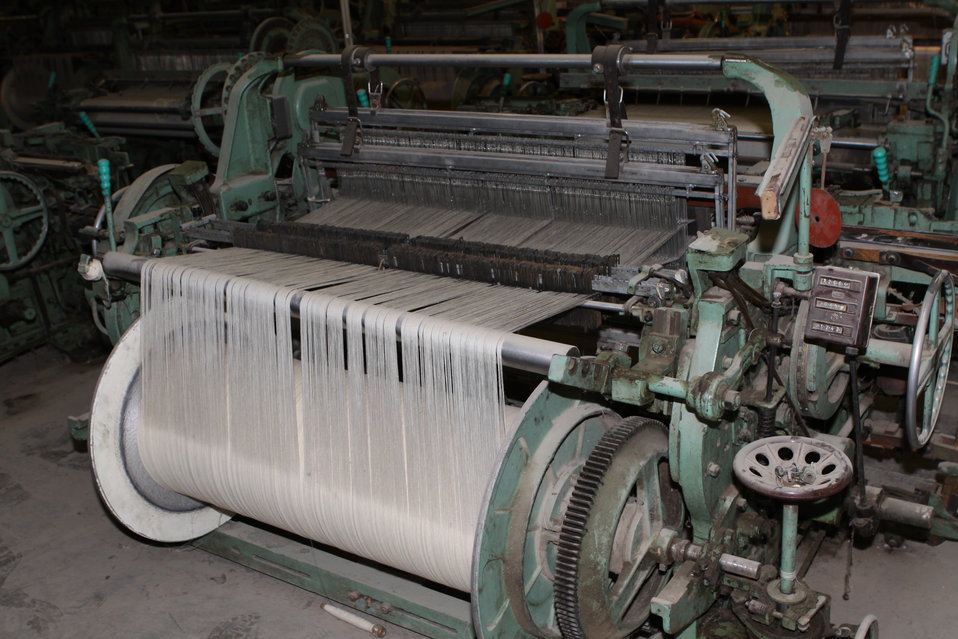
100525 Hirat Textile Company 741